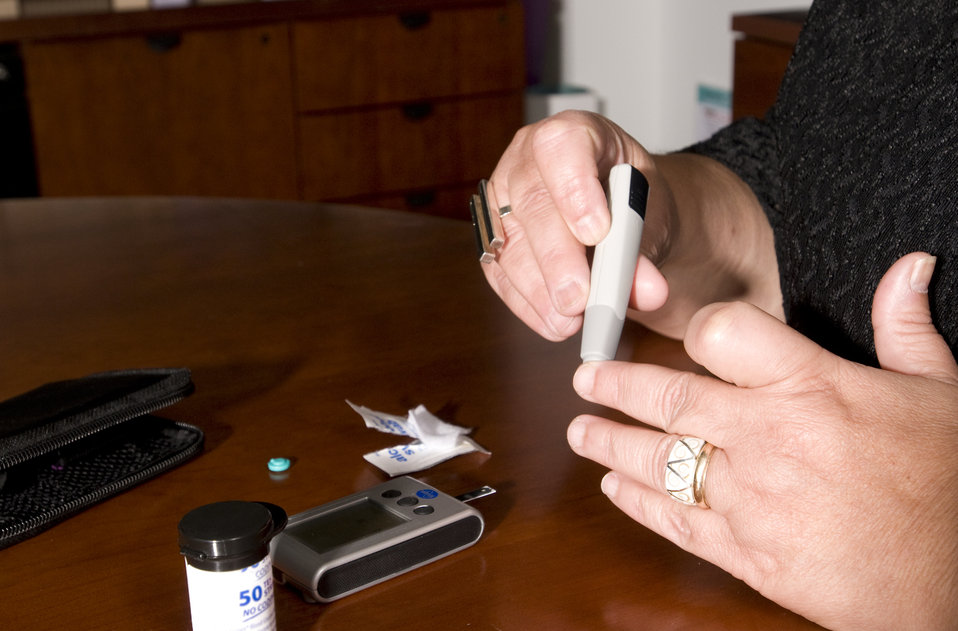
The woman pictured here, was about to check her blood glucose level. This process is known as self-monitoring blood glucose, and it's a way for people with diabetes to find out how much glucose is in their blood. A drop of blood from the fingertip is placed on a special coated strip of paper that 'reads' the amount of glucose in the blood. Many people use an electronic meter to get this reading. At this point, she was performing a controlled finger stick using a mechanized needle, which would very quickly, and relatively painlessly, penetrate the skin, thereby, inducing the delivery of a blood droplet, which could then be tested.